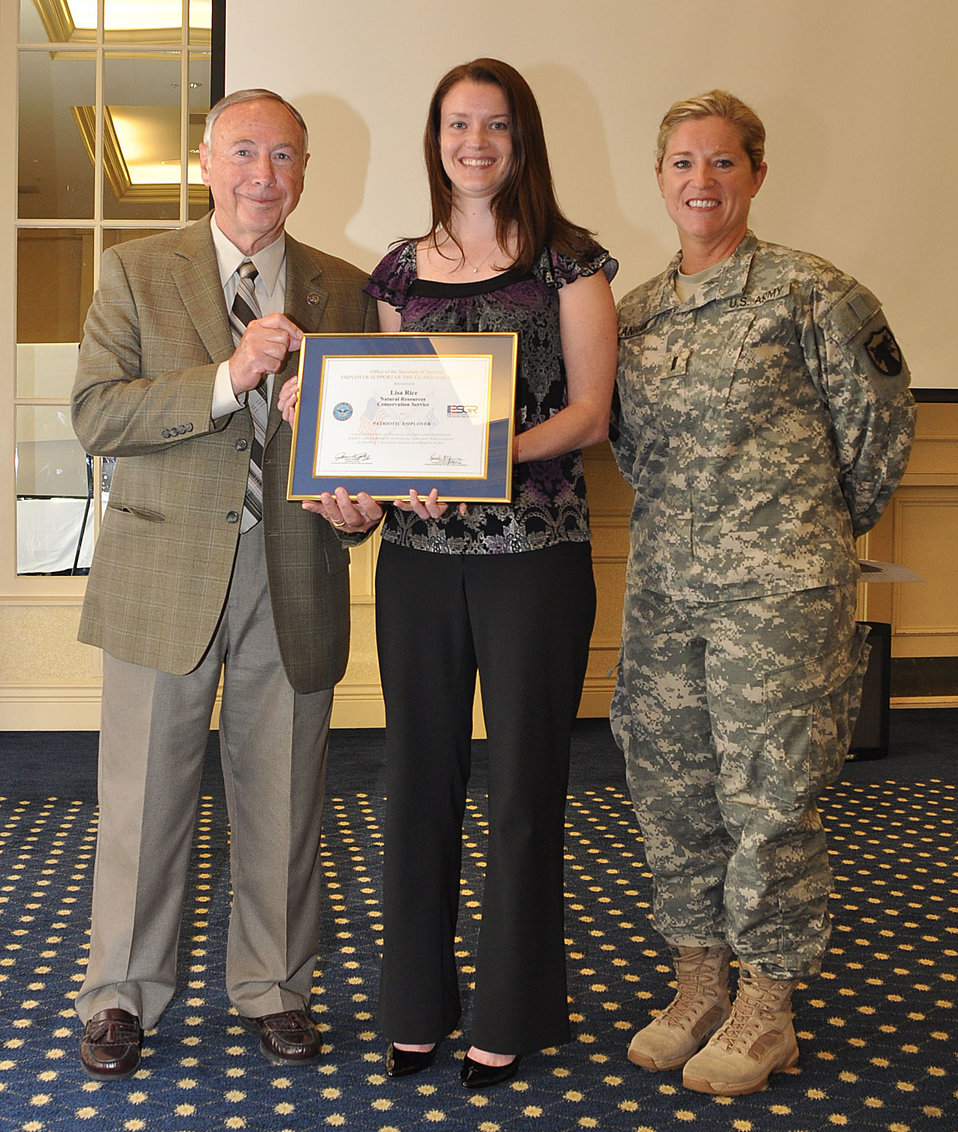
Hitchcock Rice Lanham,

(L to R) Retired Maj. Gen. Daniel F. Hitchcock Patriot Award recipient Natural Resource Conservation Service (NRCS) employee Lisa Rice, and Business Management Leaders Program (BMLP) trainee 1st Lt. Lorrie Lanham at the Wisconsin State Fair inWest Allis, WI, on Thursday, Aug. 4, 2010.